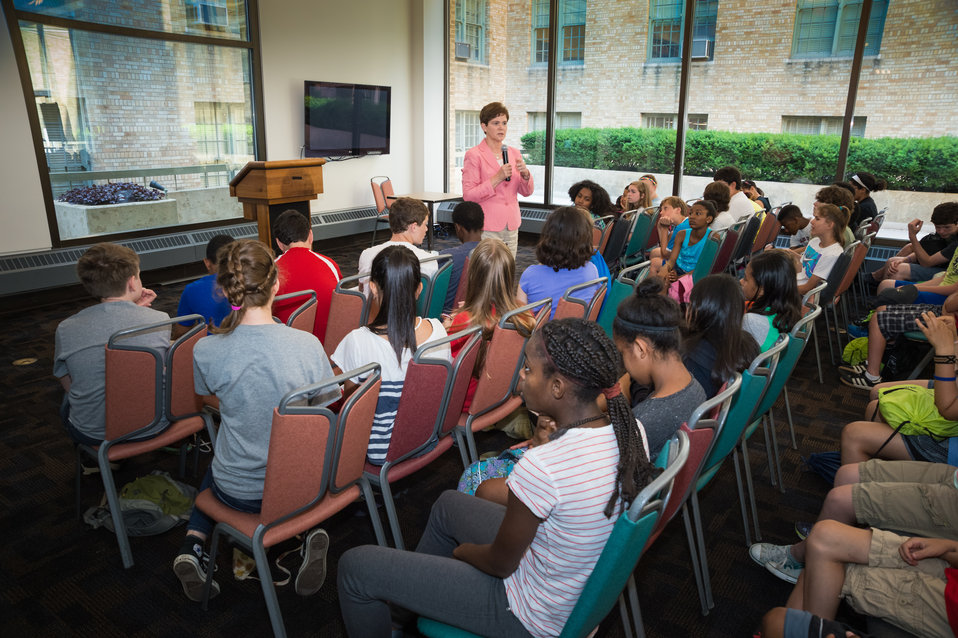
Agriculture Deputy Secretary Krysta Harden speaking with students from the Alice Deal Middle School, Washington, DC students during their visit to the United States Department of Agriculture (USDA) in Washington, DC, Wed. Jun. 4, 2014. The students studied hunger, food security, how to prevent hunger and organizations involved in solving hunger situations nationally and worldwide. A lot of what they learned is administered through the USDA.